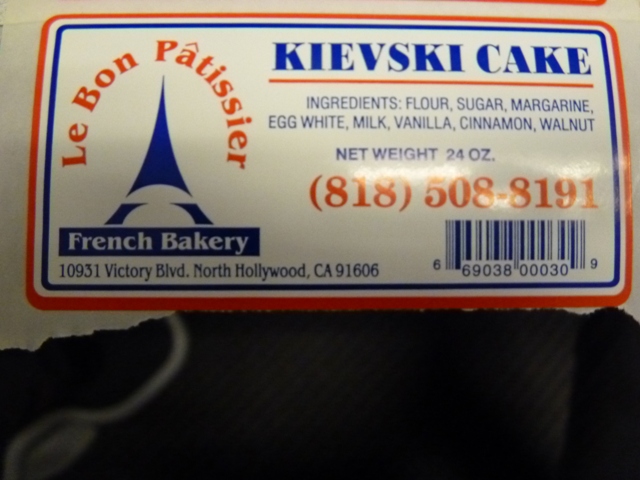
RECALLED - Pastry Products

April 5, 2011 – Product Recall – Le Bon Patissiere-2, Inc. Announces Voluntary Recall On Select Le Bon Patissiere Products That Contain Undeclared Allergens.